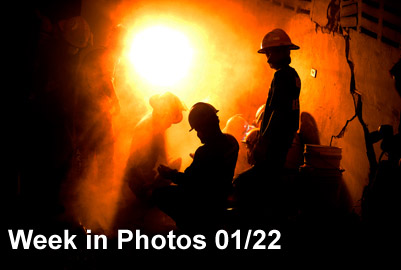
Week in Photos

Air Force Week in Photos for Jan. 22, 2010, highlights photos from around the Air Force. In this photo by Tech. Sgt. James L. Harper Jr., members of various rescue teams work to free a 25-year-old woman Jan. 19, 2010, who had been trapped in a collapsed building for seven days in Port-au-Prince, Haiti.